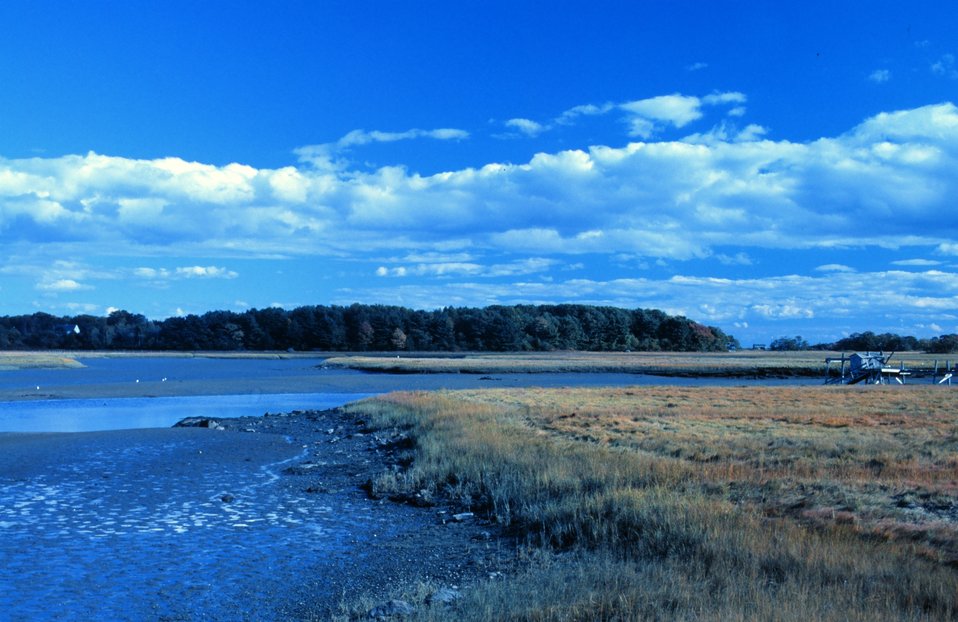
A view of wetlands at Great Bay National Estuarine Research Reserve.